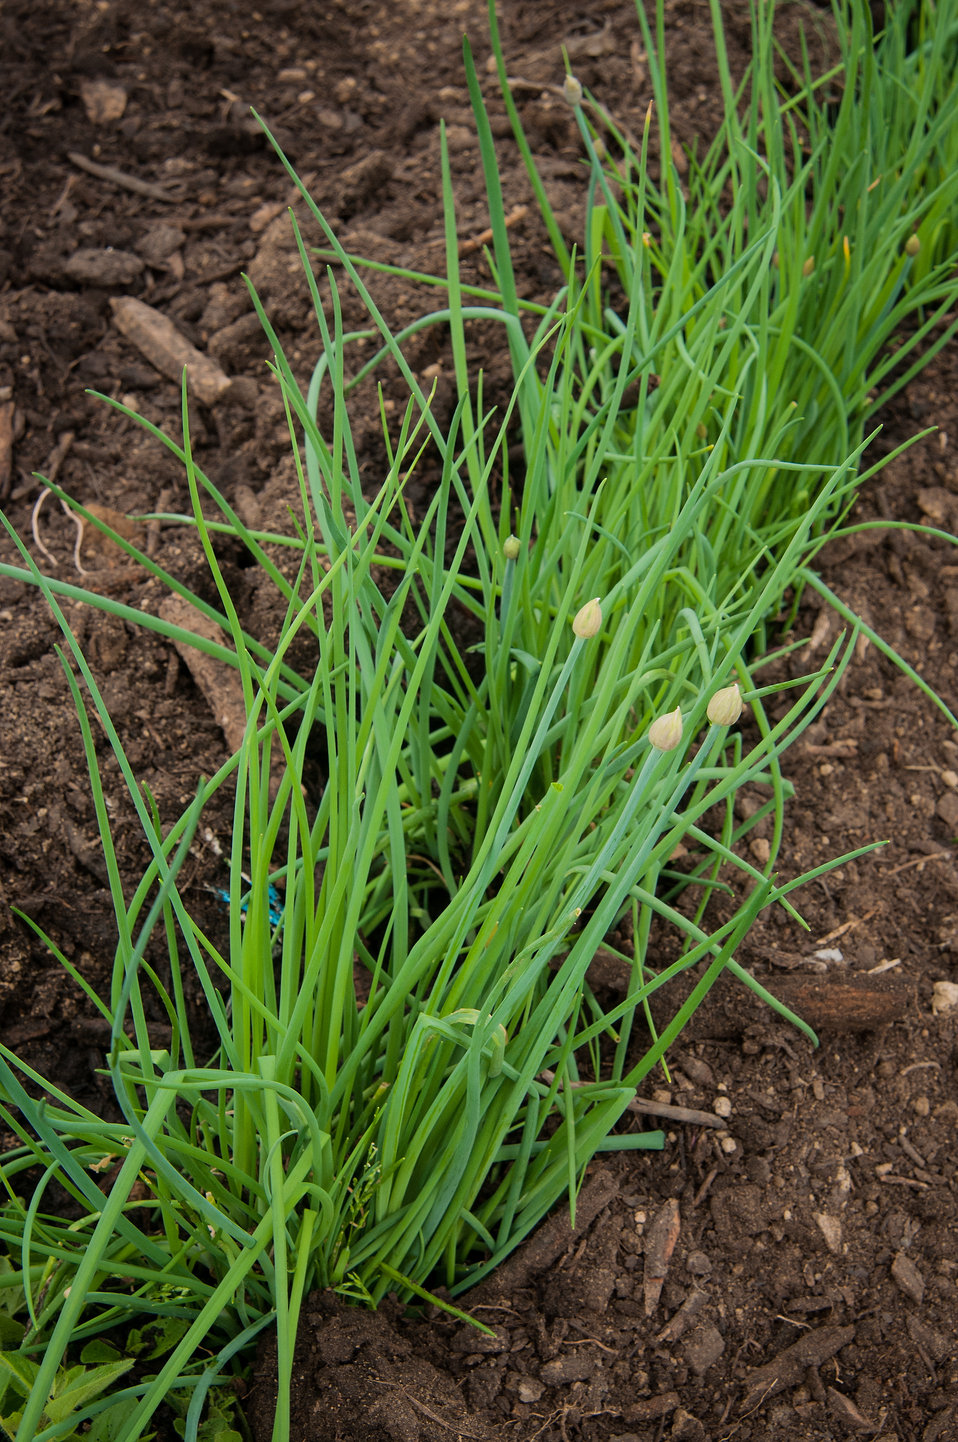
Chives are a good example of a crop to grow for food production on small plots in a high tunnel house at the East Arkansas Enterprise Community, (EAEC) Inc. in Forrest City, AR on Mar. 4, 2013. The EAEC is one of 42 community-based organizations located in high poverty areas in the U.S. to benefit from the Arkansas Delta Seeds of Change (ADSOC) Initiative. The U.S. Department of Agriculture (USDA) in partnership with Heifer International (an International organization whose mission is to work with communities to end hunger and poverty and care for the Earth) and various for-profit and non-profit organizations have organized the Seeds of Change Implementation Plan to use sustainable agriculture to build food systems in the Arkansas Delta.